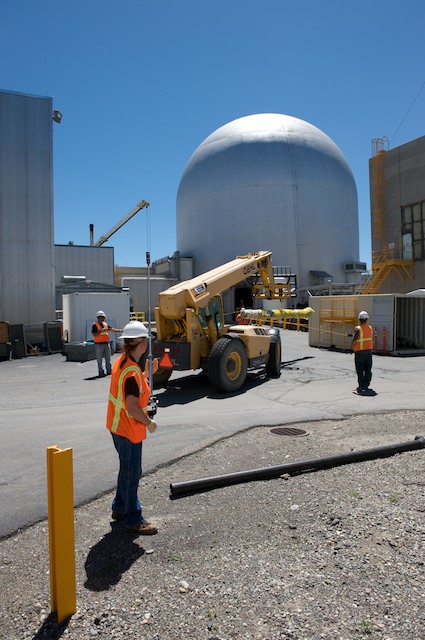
Recovery Act work